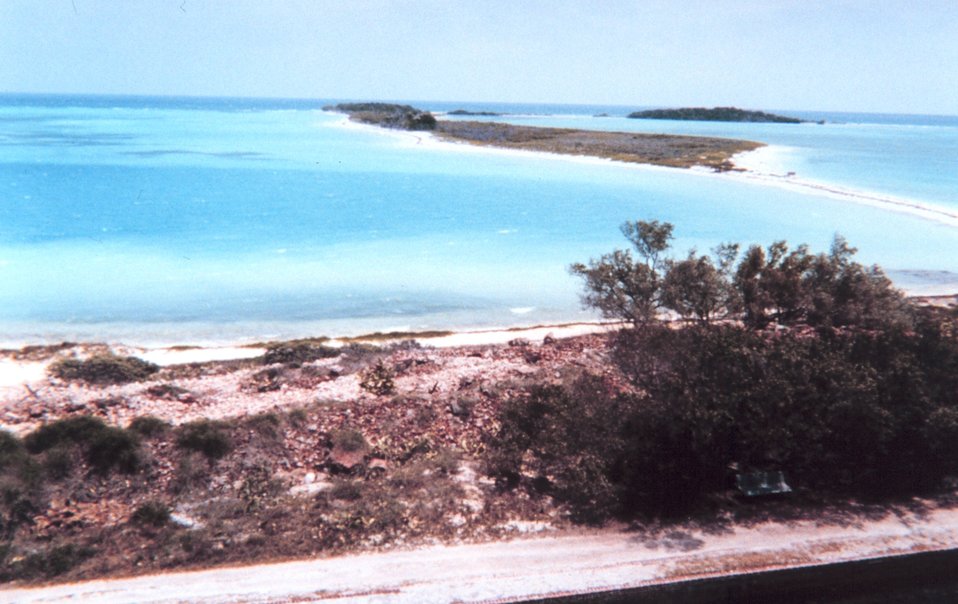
A view of the bird refuge at Dry Tortugas National Park.